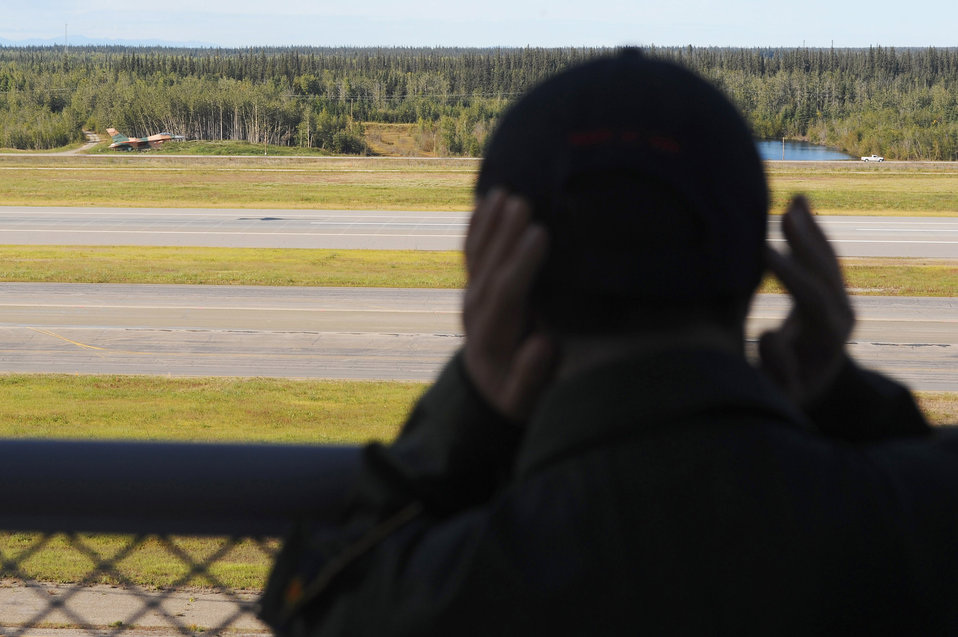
Eielson Airmen turn child into pilot for a day

Alex Lee covers his ears as he watches an F-16 Fighting Falcon take off Aug. 22 at Eielson Air Force Base, Alaska. Alex was born with congenital heart defects and Down syndrome and was selected by the Make-A-Wish Foundation for the Pilot for a Day program. The purpose of the program is to ease the pain of children who lost a normal childhood due to illnesses or disabilities.